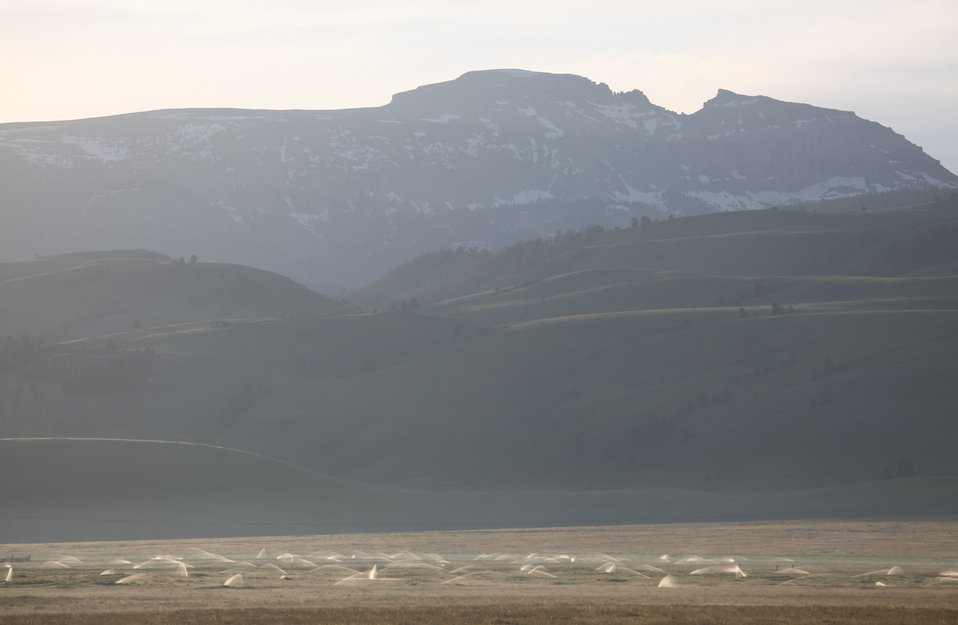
Early Morning Watering

The morning light captures both irrigation by the National Elk Refuge's K-Line system and a view of Sheep Mountain, locally referred to as the Sleeping Indian.